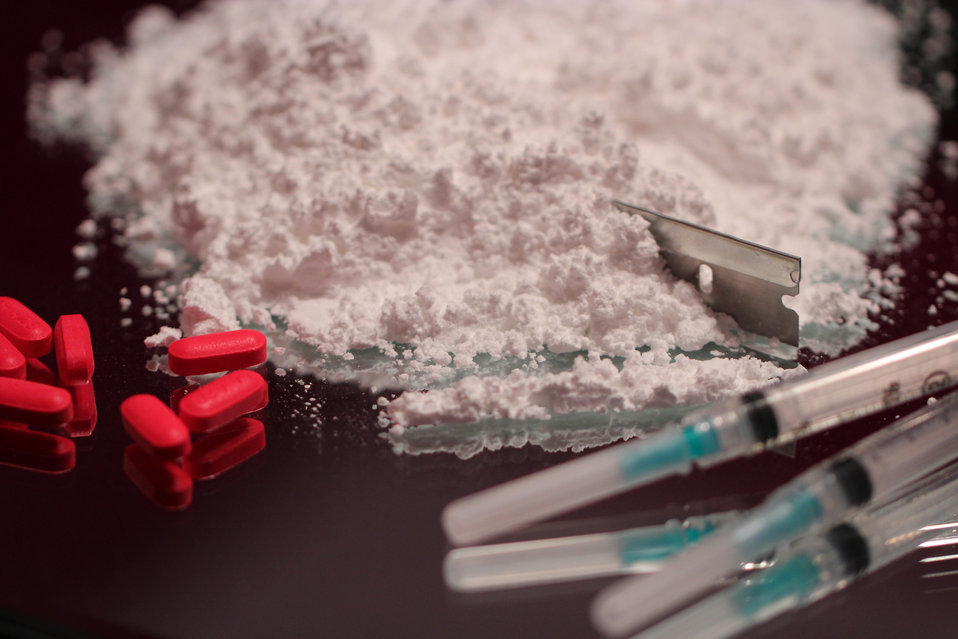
This image depicts a still life composed of a number of items set atop a mirror that represented controlled substances often ingested, inhaled, or injected by illicit drug users, including a number of red oblong tablets, a pile of a finely-granulated white powder into which a razor blade had been set upright, and in the foreground were two unopened syringes.